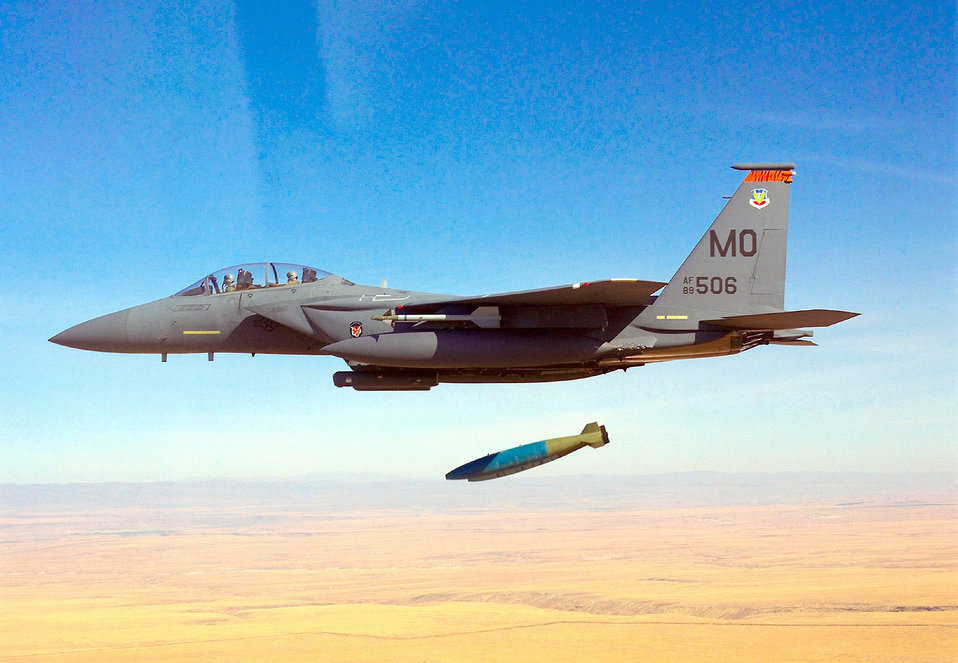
Strike Eagle strikes

FILE PHOTO -- The F-15E Strike Eagle is a dual-role fighter designed to perform air-to-air and air-to-ground missions. An array of avionics and electronics systems gives the F-15E the capability to fight at low altitude, day or night, and in inclement weather and perform its primary function as an air-to-ground attack aircraft.